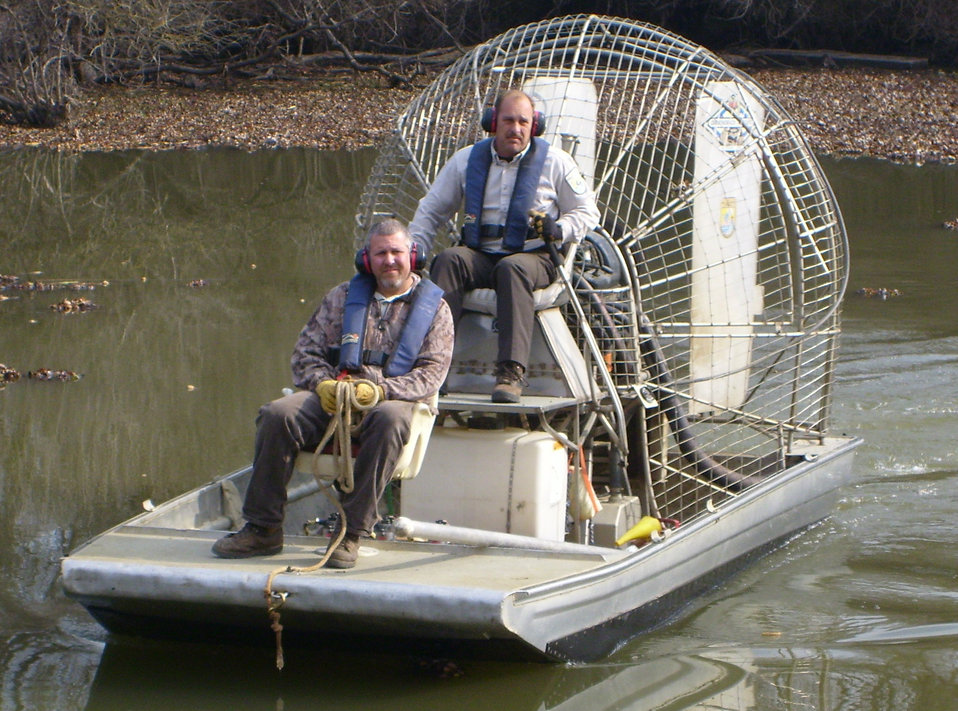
Bruce Hall and Jim Kerruish

Bruce Hall (U.S. Army 1982-2004) is a maintenance worker at Stone Lakes NWR where he works alongside motor vehicle operator Jim Kerruish (U.S. Marine Corps 1982-1991) (Hall is driving in the photo.)